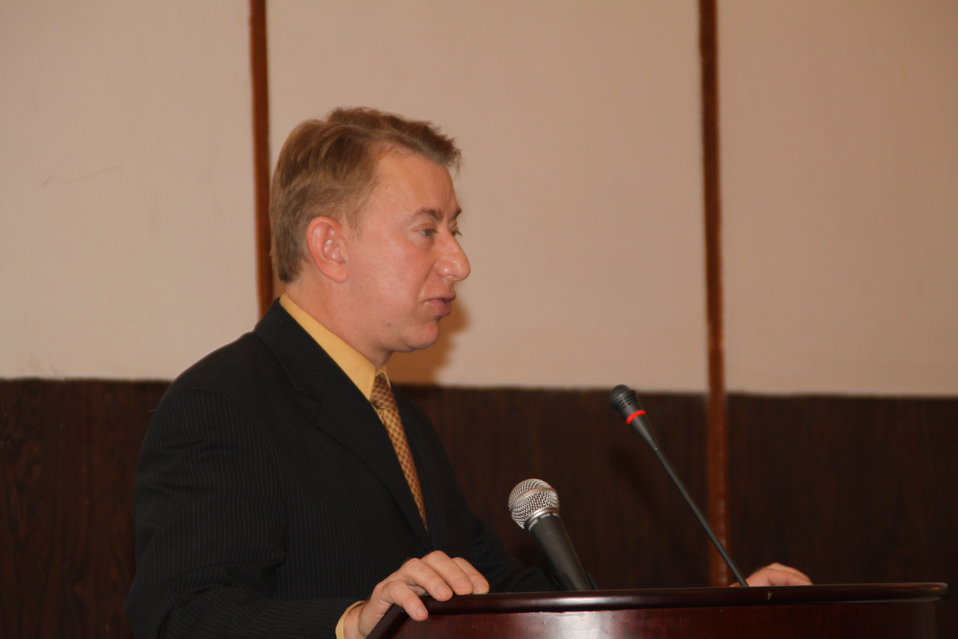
USAID Office Director Jerry Bisson